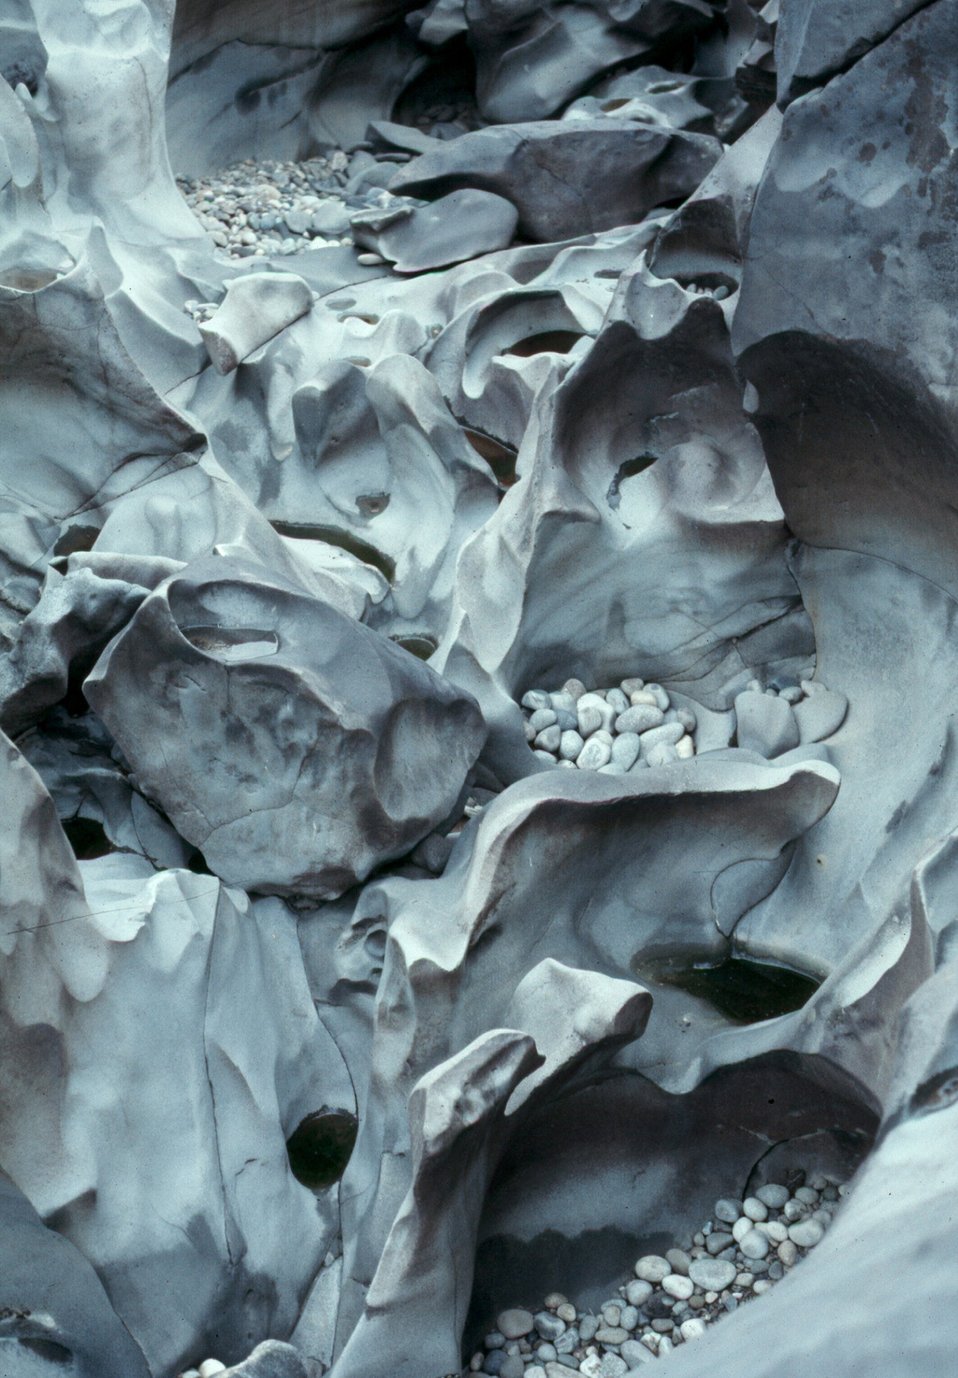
Nested potholes Shoshone Field Office USRD Upper Snake River District